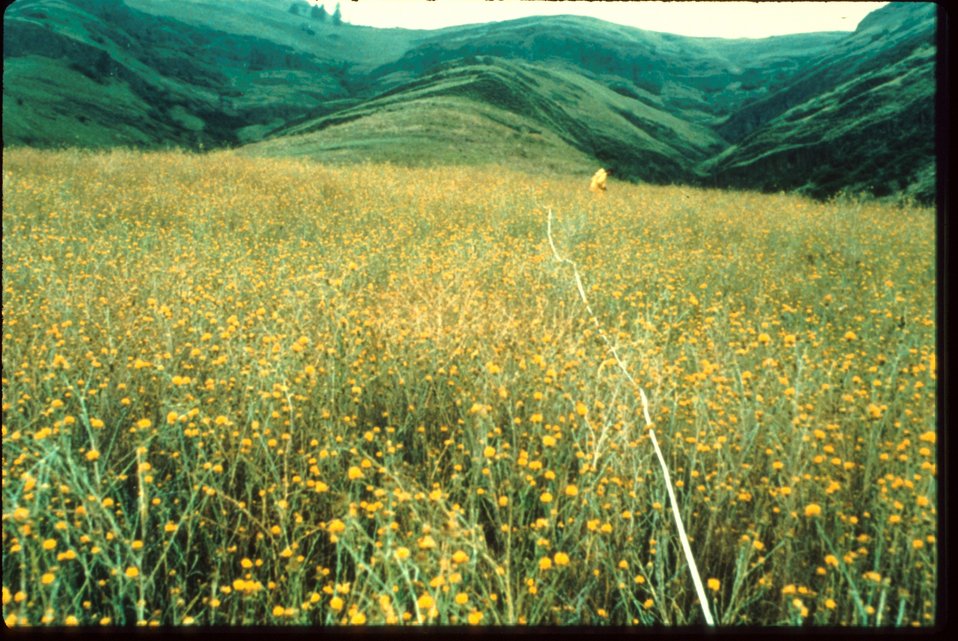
Yellow Starthistles has completely taken over area Idaho vegetation Plants in BLM